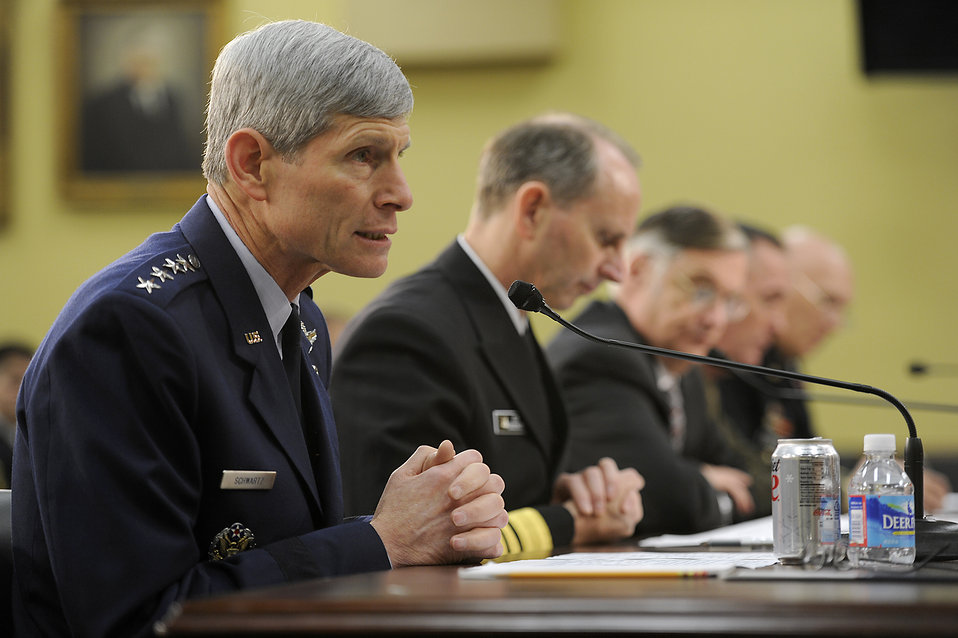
CSAF testifies for House Appropriations Committee

Air Force Chief of Staff Gen. Norton Schwartz testifies before the House Appropriations Committee's Subcommittee on Military Construction, Veterans Affairs and Related Agencies on the service's fiscal 2013 budget request March 1, 2012, in Washington D.C. Chief of Naval Operations Adm. Jonathan Greenert, Under Secretary of Defense and Chief Financial Officer Robert F. Hale, Assistant Commandant of the Marine Corps Gen. Joseph F. Dunford, Jr. and Army Chief of Staff Gen. Raymond Odierno also provided testimony on behalf of their respective services.